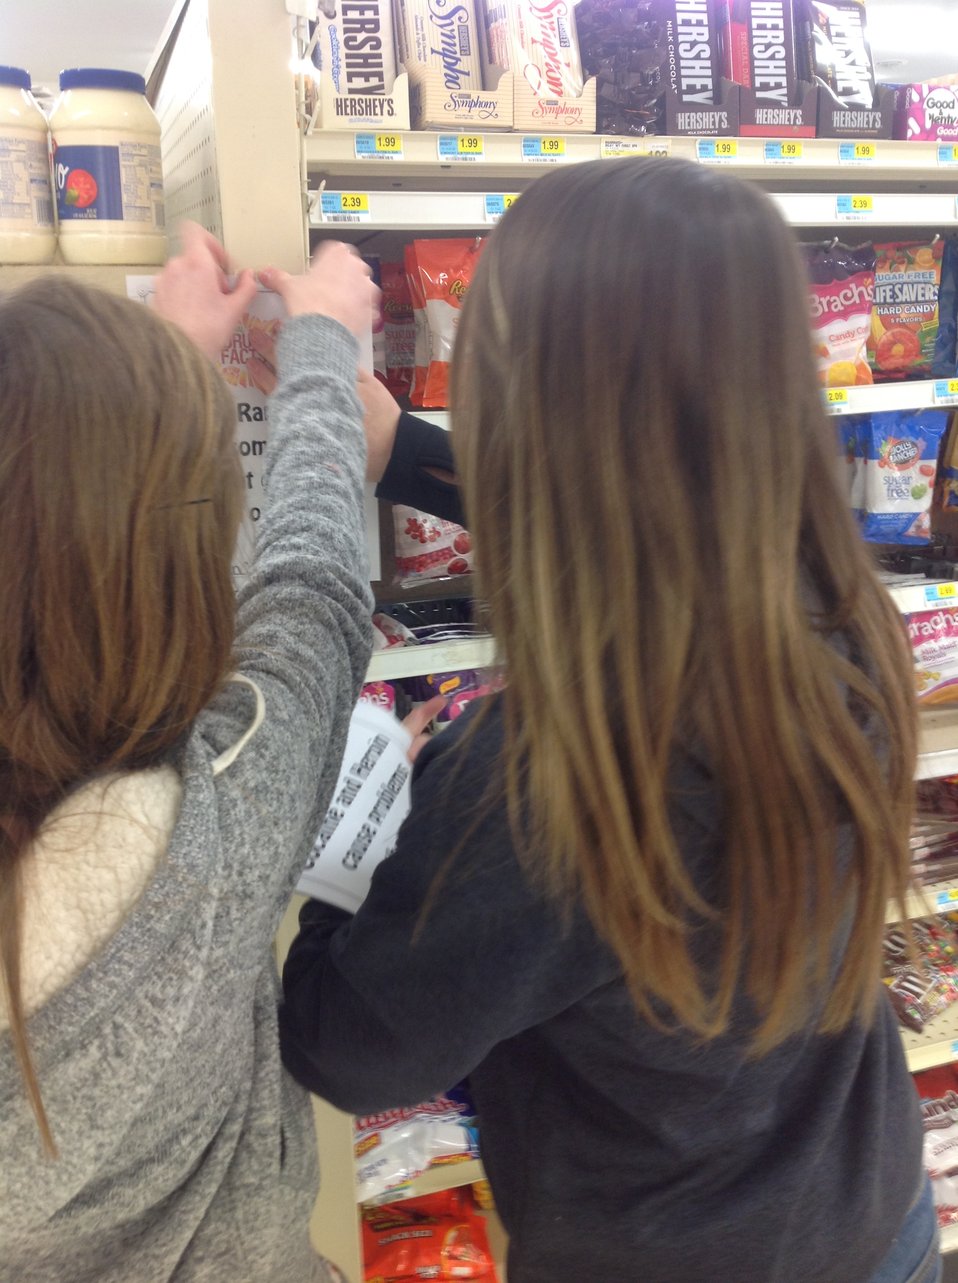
Being creative...NDFW 2014

Teenagers from the Van Buren County SAFE Coalition's, Youth Leadership Council (YLC) in Keosauqua, Iowa participate in various events during National Drug Facts Week, 2014.